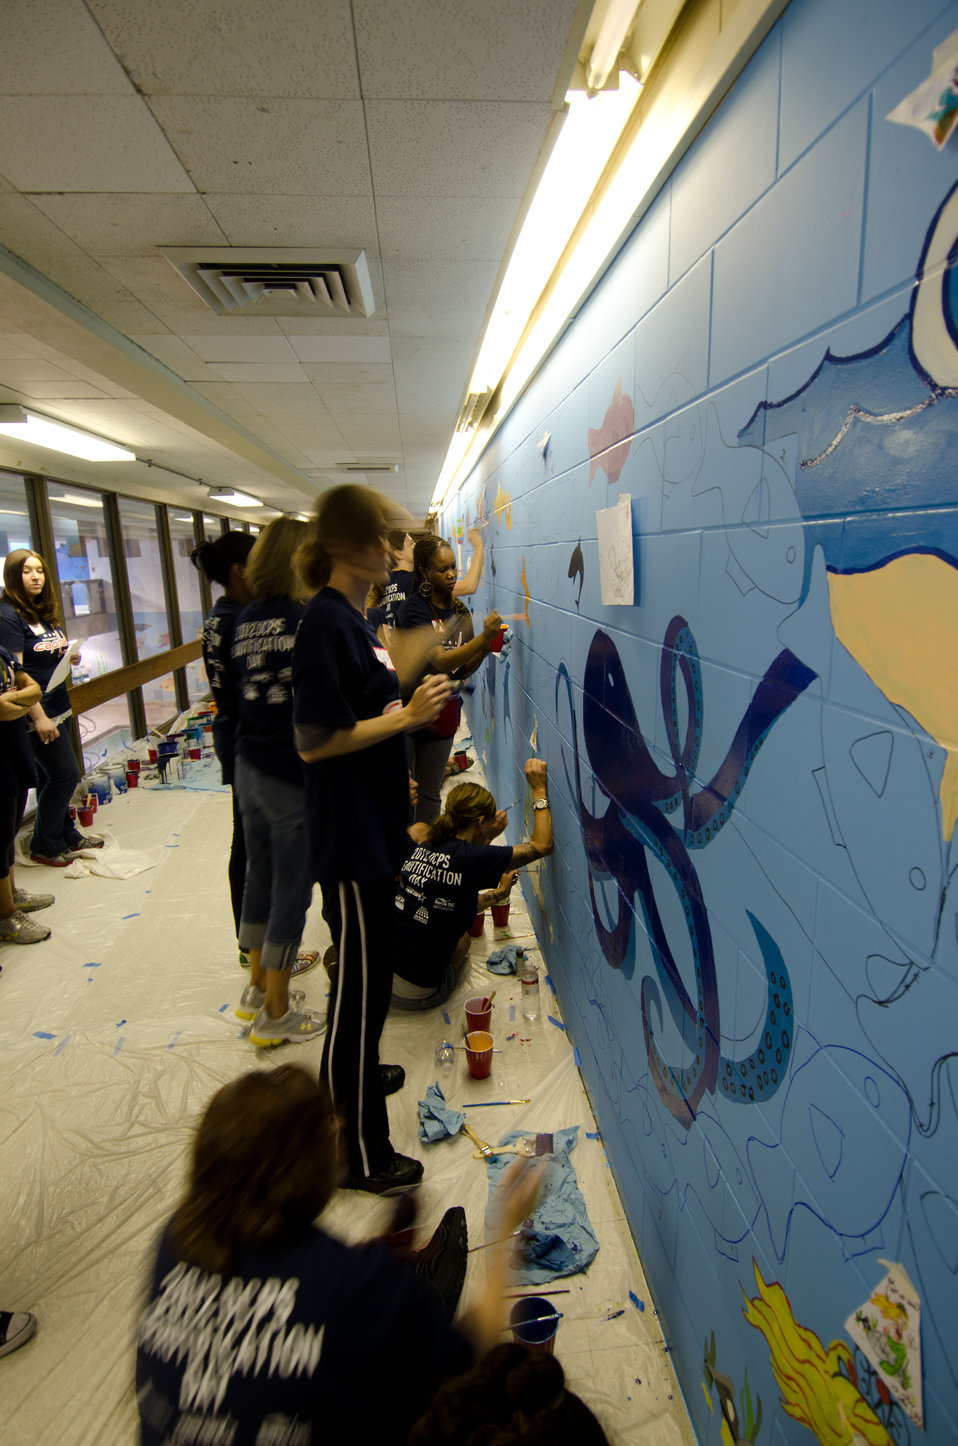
U.S. Department of Agriculture (USDA) People’s Garden Executive Master Gardeners, friends, and family, along with Washington Capitals fans are volunteering in District of Columbia Public Schools’ (DCPS) Beautification Day, on Saturday, August 25, 2012, at Thurgood Marshall Elementary School, in Washington, D.C. Each year people are invited to help “spruce up” public school facilities in preparation for the first day of school. More than 70 volunteers pitched in at this large school facility. The People’s Garden effort involves building and painting raised planter boxes, then preparing the soil mixture so they are “ready to grow.” Additionally, a team that includes descendants of U.S. Supreme Court Justice Thurgood Marshall assembles a prefabricated garden toolshed. The Justice’s son, John Marshall leads the team, which includes Brianna the Justice’s great-grand daughter in one of many multi-generational efforts at this school today. Washington Capitals Forward Mike Riberio, his family and mascot Slapshot participated in every project underway at Marshall School. From the outside gardens, to inside mural painting, and robotics worktable construction, the teams made their goals.